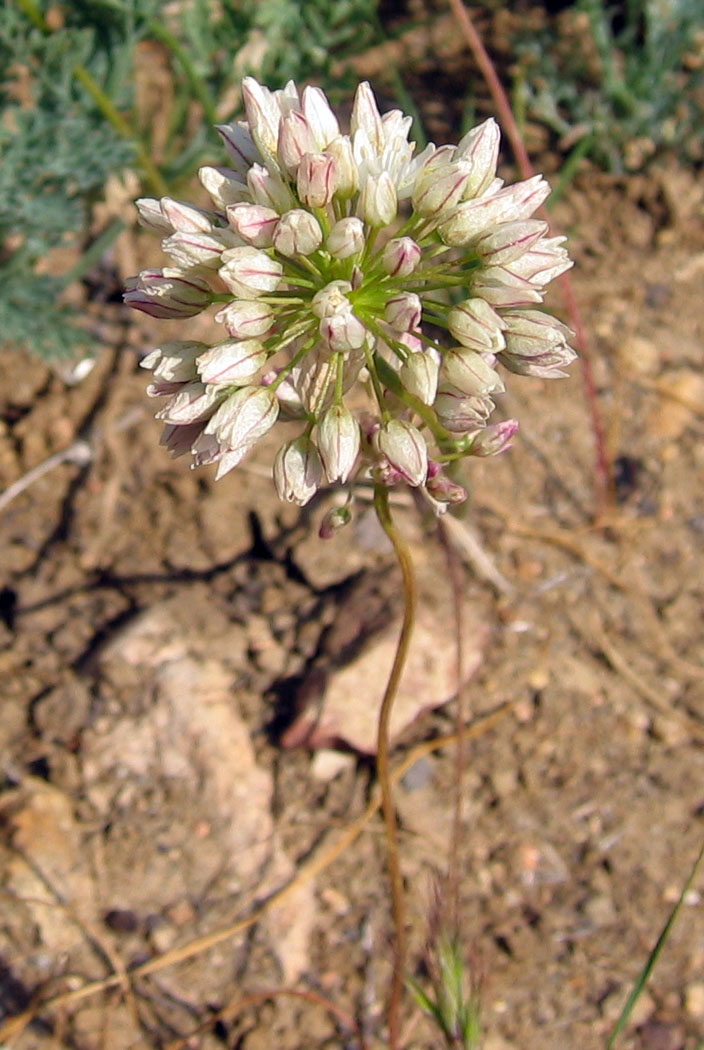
Allium munzii (Munz's onion) is a federally endangered bulb-forming perennial herb endemic to western Riverside County, California. Plants are adapted to seasonal drought and variable annual rainfall and occur primarily in areas between 1,200 to 2,700 feet containing clay soils in association with grasslands, open coastal sage scrub, or occasionally juniper woodlands. Bulbs produce a single leaf and a leafless flower stalk 0.5 to 1.2 feet tall surmounted by a cluster of 10-35 white flowers that become red as they age.